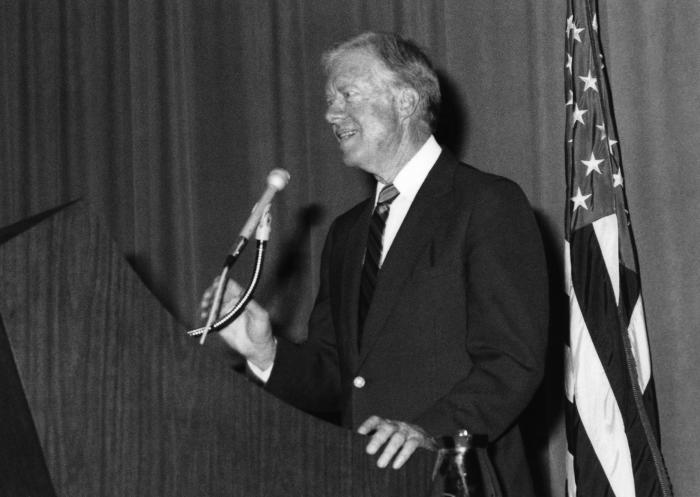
This 1984 photograph showed former U.S. President Jimmy Carter (1977-1981), as he was addressing Centers for Disease Control personnel during a visit to the Roybal, Clifton Road Campus in Atlanta, Georgia.